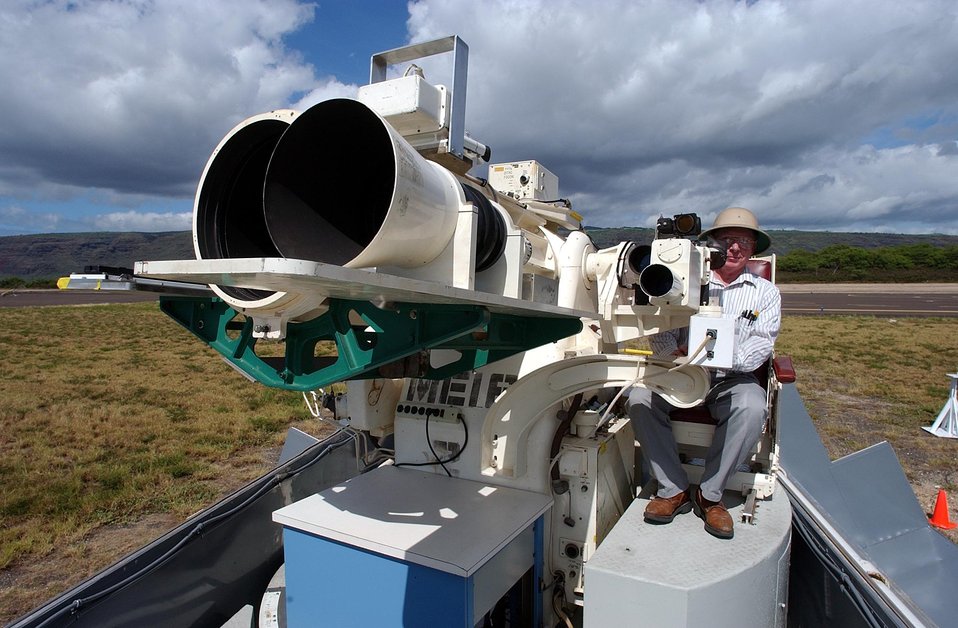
TECHNICIAN INSTALLS MOTOR ASSEMBLY ON A TRACKING RADAR IN PREPARATION FOR A BALLOON LAUNCH.

WEATHER BALLOONS ARE EQUIPPED WITH REFLECTORS AND LOCATORS THAT ALLOW SCIENTISTS TO TRACK THE BALLOONS UNTIL THEY EXPAND AND ULTIMATELY POP AT 12,000 FEET. SANDIA'S KAUAI TEST FACILITY, OPERATED FOR DOE, IS ON THE U.S. NAVY'S PACIFIC MISSILE RANGE FACILITY ON THE ISLAND OF KAUAI, HAWAII. SANDIA SCIENTISTS AND TECHNICIANS CONDUCT ROCKET FLIGHT TEST EXPERIMENTS RANGING FROM OFFENSIVE AND DEFENSIVE WEAPONS TESTING TO ATMOSPHERIC STUDIES AND HIGH TECH STAR GAZING.